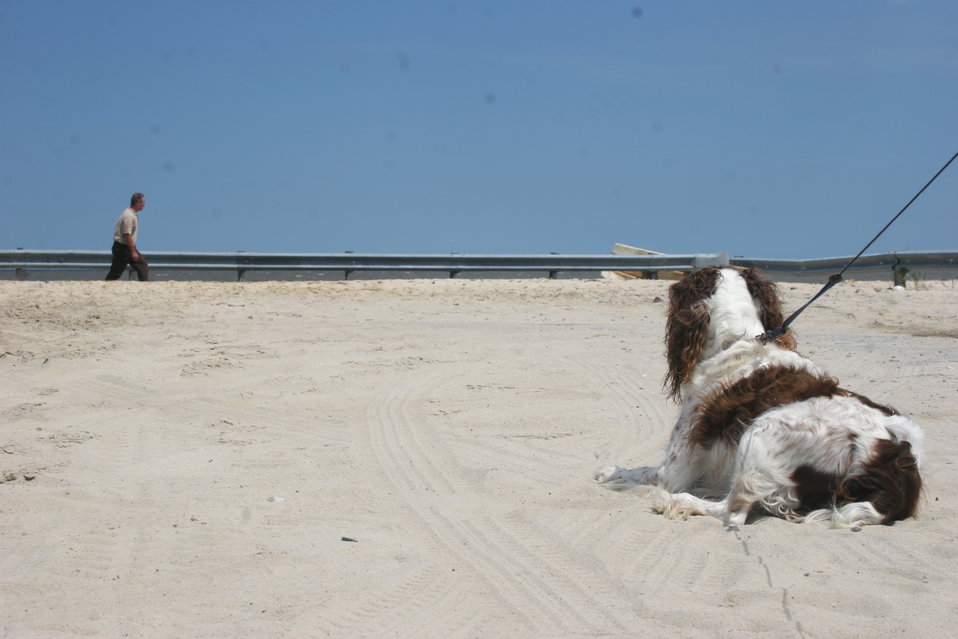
Dog Contemplating Life at Prime Hook NWR